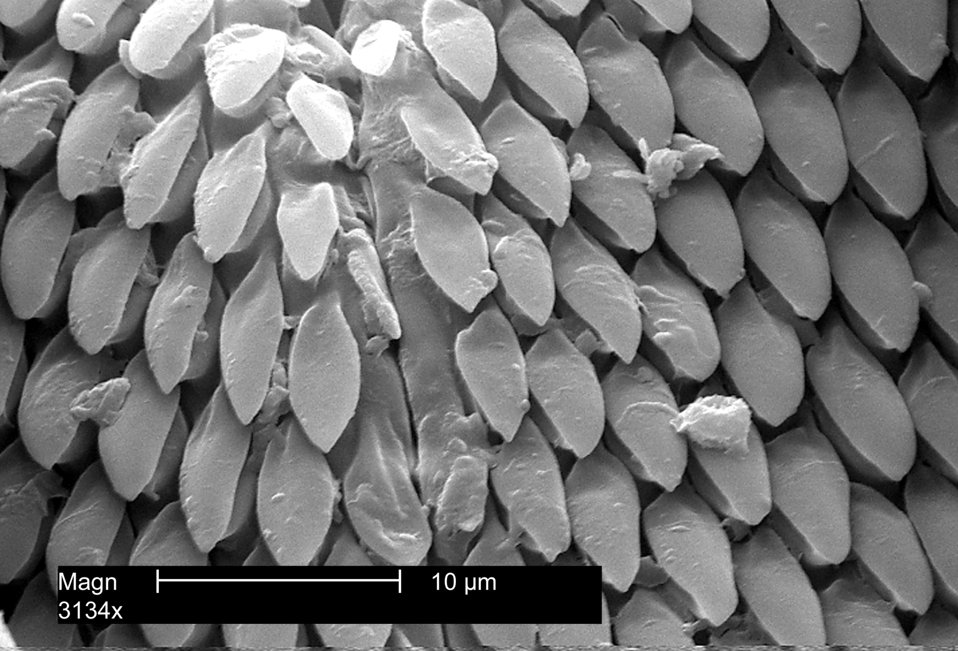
Enlarged view of mouth parts of an American Dog Tick, Dermacentor variabilis, magnified 3134x.